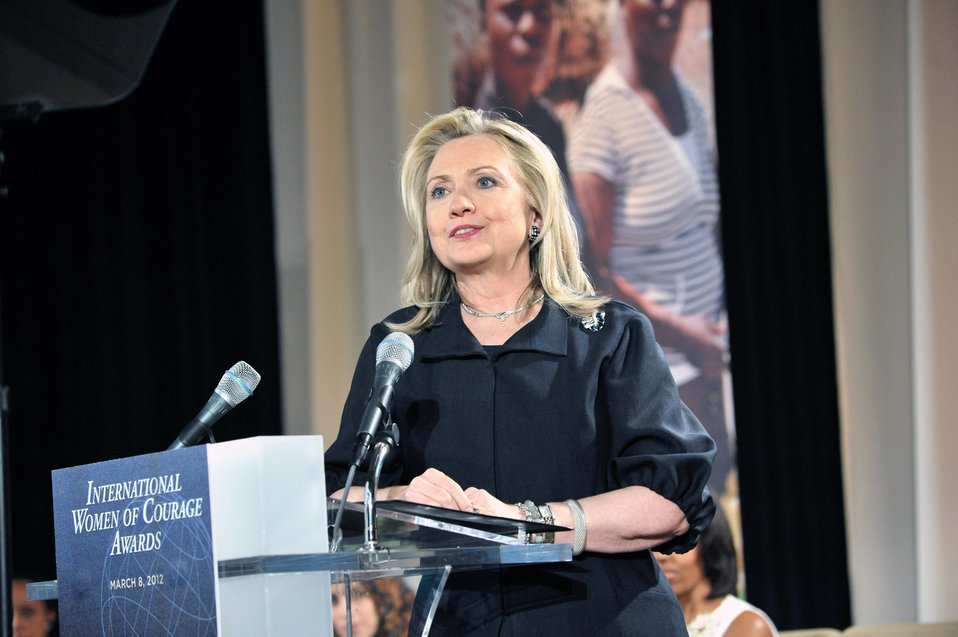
Secretary Clinton Delivers Remarks at 2012 IWOC Awards Ceremony

U.S. Secretary of State Hillary Rodham Clinton delivers remarks at the 2012 International Women of Courage (IWOC) Awards Ceremony at the U.S. Department of State in Washington, D.C., on March 8, 2012.